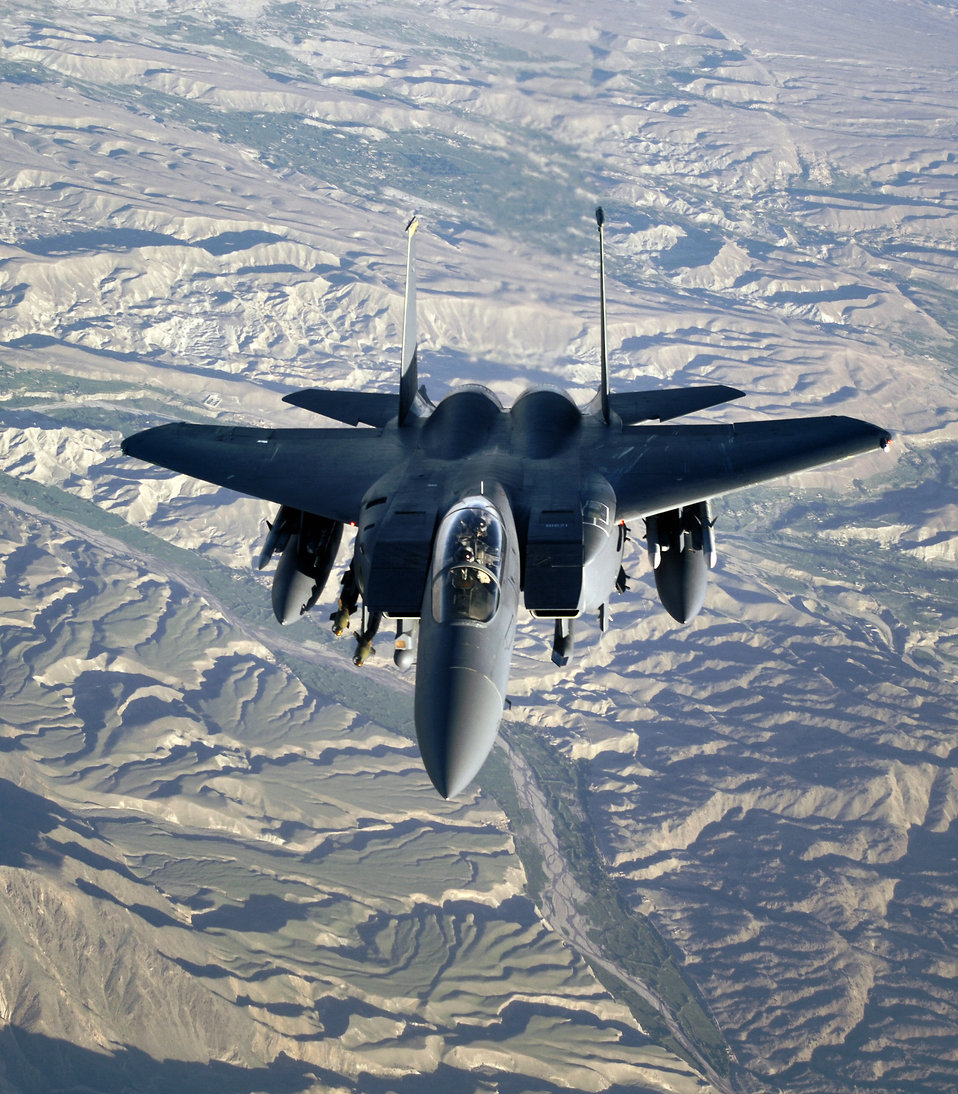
Sept. 17 airpower summary: F-15Es deter enemy activity

An F-15E Strike Eagle assigned to a Southwest Asia base soars over the mountains and high desert of Afghanistan. The Strike Eagle is a dual-role fighter designed to perform air-to-air and air-to-ground missions.